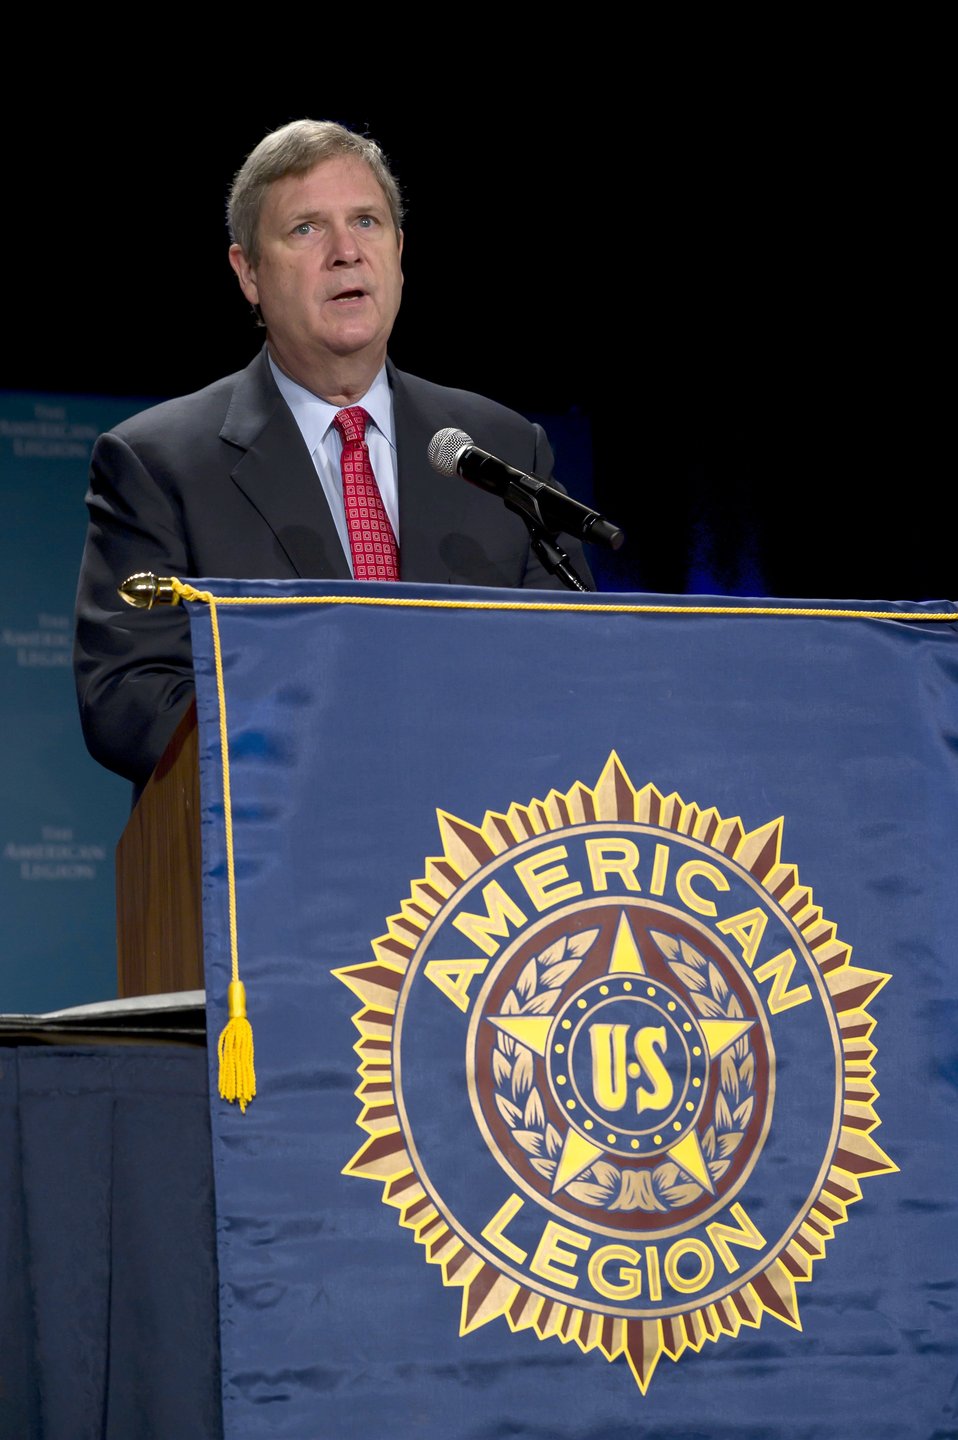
U.S. Secretary of Agriculture Tom Vilsack speaks before the American Legion prior to signing a memorandum of understanding with the American Legion which will help our Nation's veterans and transitioning military service members find positions that promote agriculture, animal and plant health, food safety, nutrition, conservation and rural communities at the Washington Hilton in Washington, D.C., on Tuesday February 28, 2012.